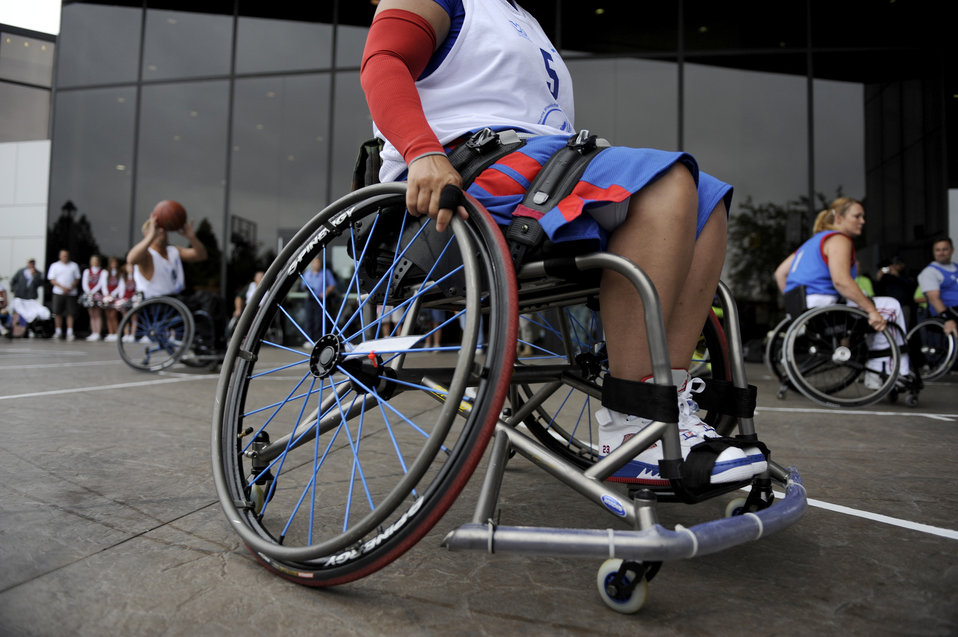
Veterans wheelchair games kick off

Veterans play a games of wheelchair basketball against media outlets July 13 during the 29th National Veterans Wheelchair Games held in Spokane, Wa . More than 500 veterans meet at the convention center to take part in the 2009 National Veterans Wheelchair Games July 13 through 19.